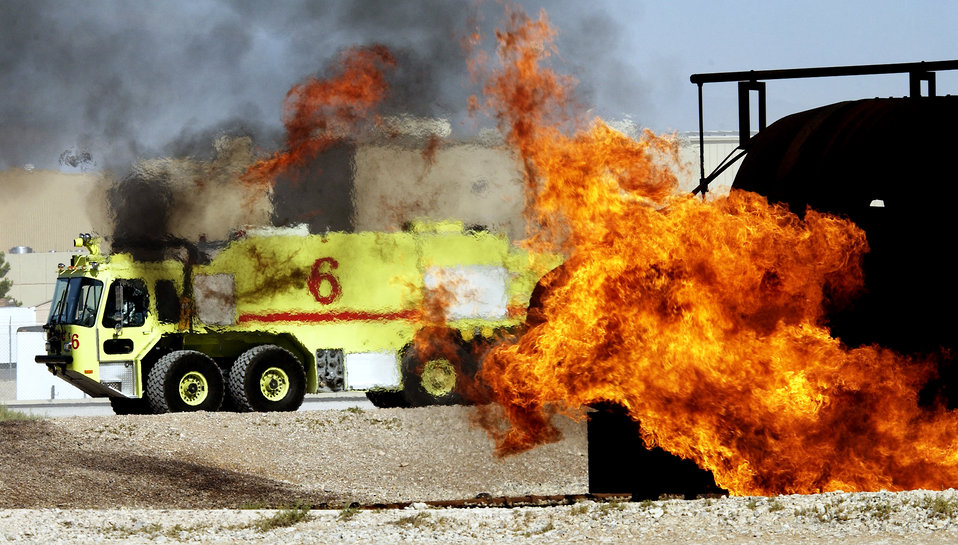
Blazin'

NELLIS AIR FORCE BASE, Nev. -- Firefighters from the 99th Civil Engineer Squadron fire department prepare to use an aircraft rescue firefighting apparatus truck to put out a controlled plane fire during a recent exercise here. The truck can hold up to 3,300 gallons of water, 500 gallons of foam and can pump 250 gallons of water or foam per minute.